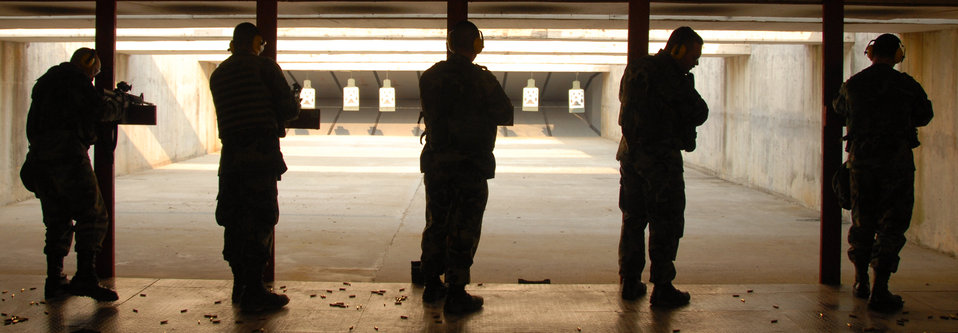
Shooting Range

Airmen on Osan Air Base, South Korea, hone their skills at the rifle range on March 15. Air Force members visit the range annually to maintain readiness.